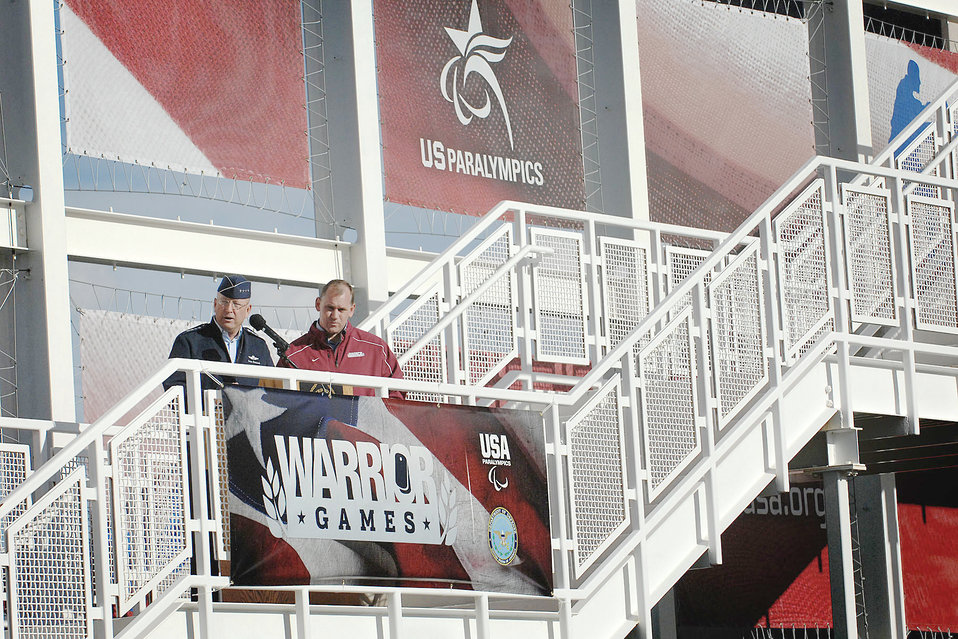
Olympic path marks troops' journeys to fulfilled dreams

Gen. Victor E. Renuart Jr. speaks at the opening ceremonies of the inaugural Warrior Games May 10, 2010, at the Olympic Training Center in Colorado Springs, Colo. Also pictured is Charlie Huebner, the chief of U.S. Paralympics. General Renuart is the commander of U.S. Northern Command.